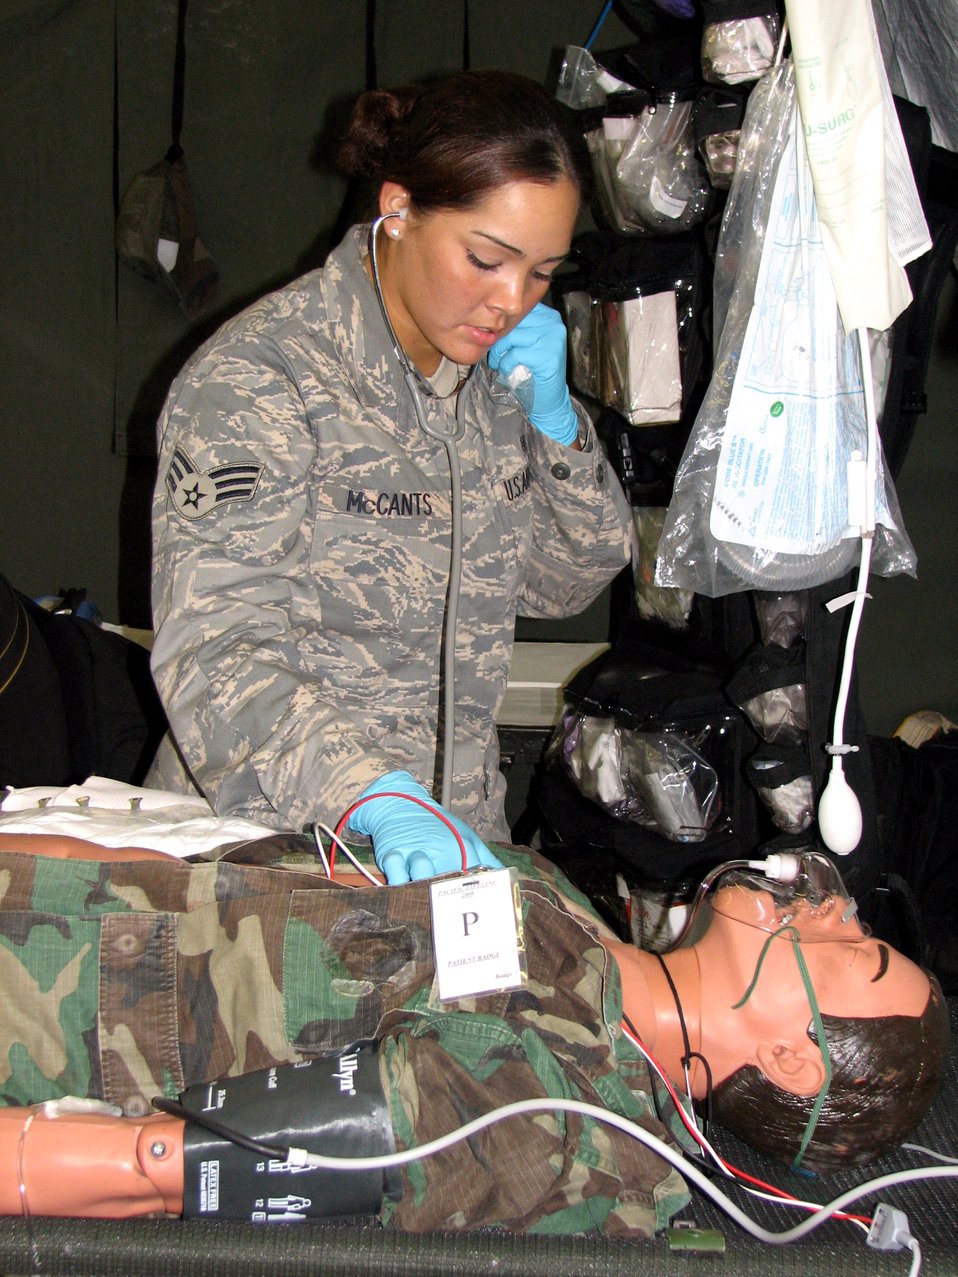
Pacific Lifeline tests humanitarian relief concept

Senior Airman Nicole McCants checks the vital signs of a patient during a mass casualty exercise Feb. 4 at the Kona International Airport at Kona, Hawaii. Airman McCants, a respiratory therapy specialist from the 3rd Medical Group from Elmendorf Air Force Base, Alaska, is one of more than 900 Department of Defense members who participated in Pacific Lifeline, a total force humanitarian assistance and disaster relief exercise that took place from three locations within the Hawaiian Islands through Feb. 9. Led by 13th Air Force, Pacific Lifeline provided an integrated team of Air Force and Army active-duty, Air National Guard and Reserve component forces a training environment to test their abilities to respond to and support humanitarian and natural disaster relief operations.